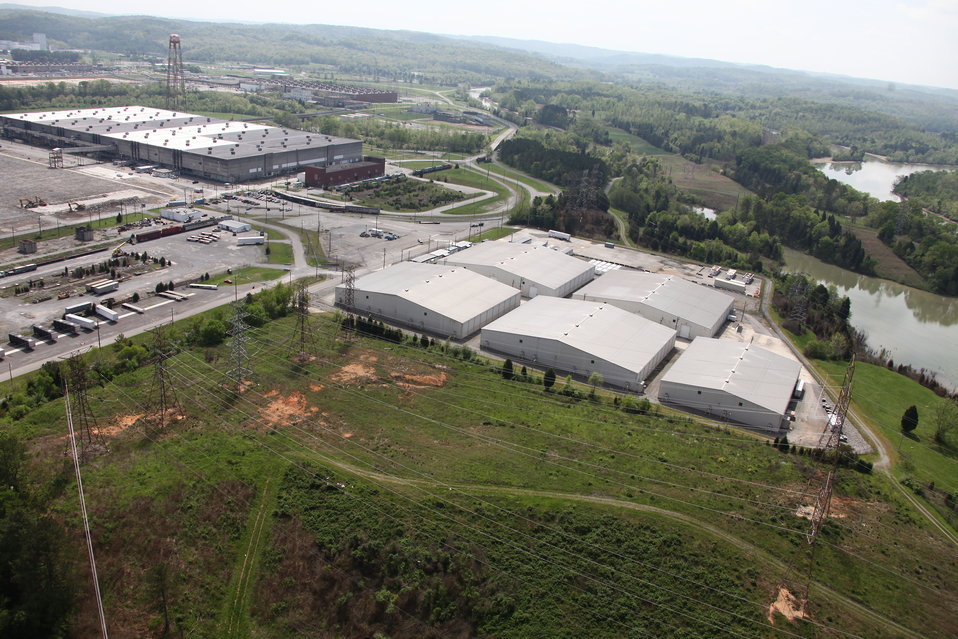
ETTP